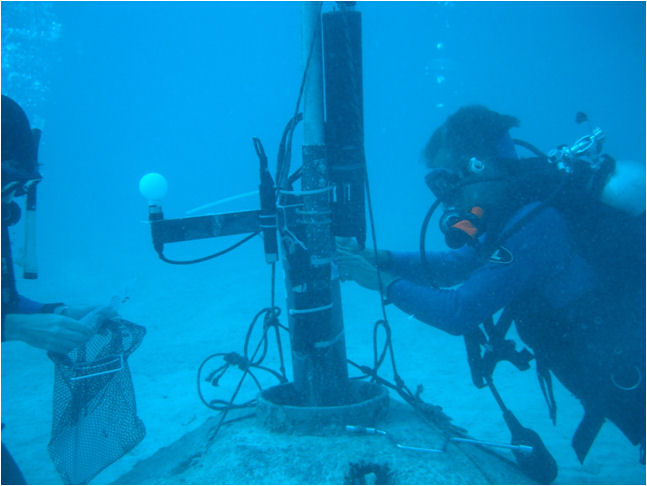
May, 2012 Monitoring water conditions on the ocean floor

EPA divers tend to scientific equipment on the ocean floor.

The Datasonde and PARs equipment pictured here can measure dissolved oxygen (which fish and marine life need to survive), as well as turbidity (clarity of the water), salinity (level of salt), pH (level of acidity), and Photosynthetically-Available Radiation (PARs) (sunlight which reaches the bottom and is still usable by marine plant life for photosynthesis).

This picture was taken in the Gulf of Mexico.